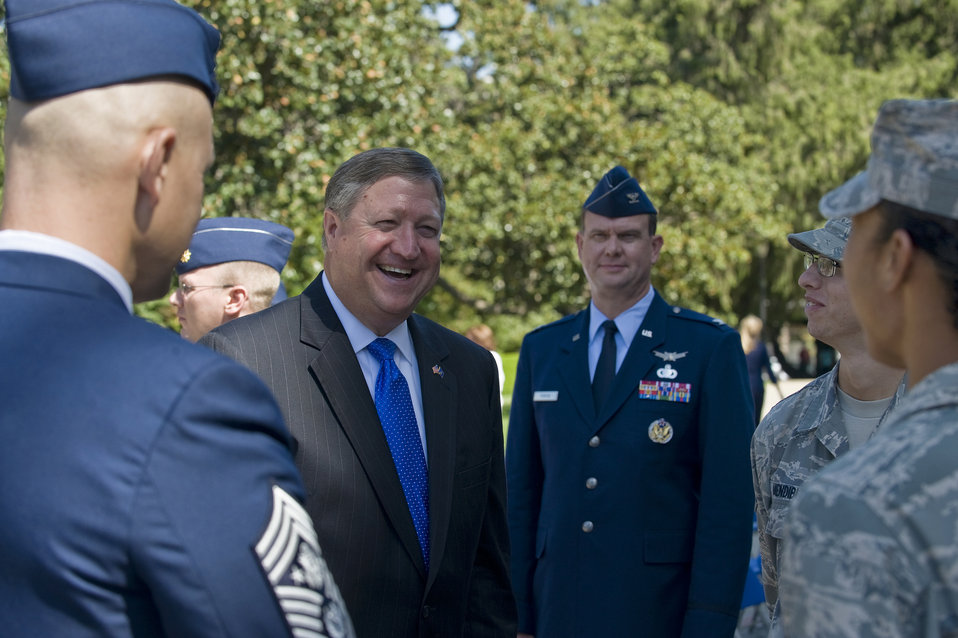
Air Force Week-Sacramento

Secretary of the Air Force Michael Donley and Chief Master Sergeant of the Air Force James A. Roy speak with Airmen stationed at Travis Air Force Base, Calif. The Air Force leaders were in town for a proclamation ceremony at the California State Capitol building’s West steps Sept. 8 naming Sept. 8 to 13, 2009 Air Force Week-Sacramento. The ceremony featured flyovers by a C-17 Globemaster III and a KC-10 Extender, as well as performances by the Air Force Band of the Golden West and the Air Force Drill Team. Air Force Week-Sacramento presents activities and exhibitions used to educate the community about the Air Force's capabilities and missions.